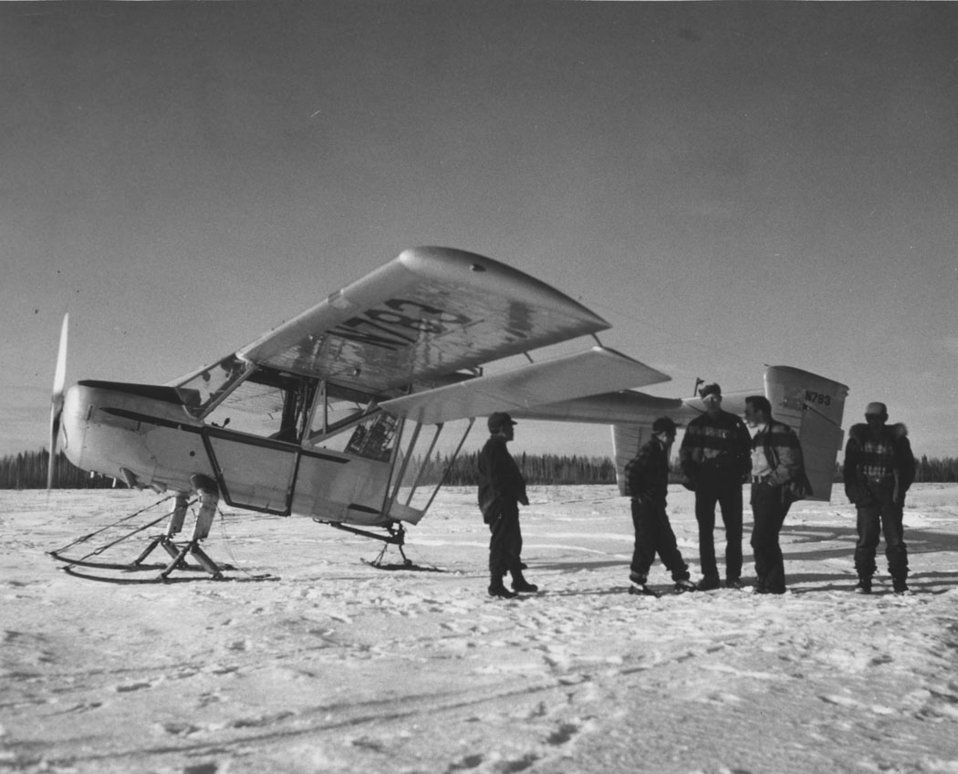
Agent Tremblay and small N783 plane

Agent Tremblay with U.S. Commissioner Allen of Nenana (tallest) and three local Nenana residents April 1954. Jim King Collection. Aircraft used in apprehension and conviction of violators.